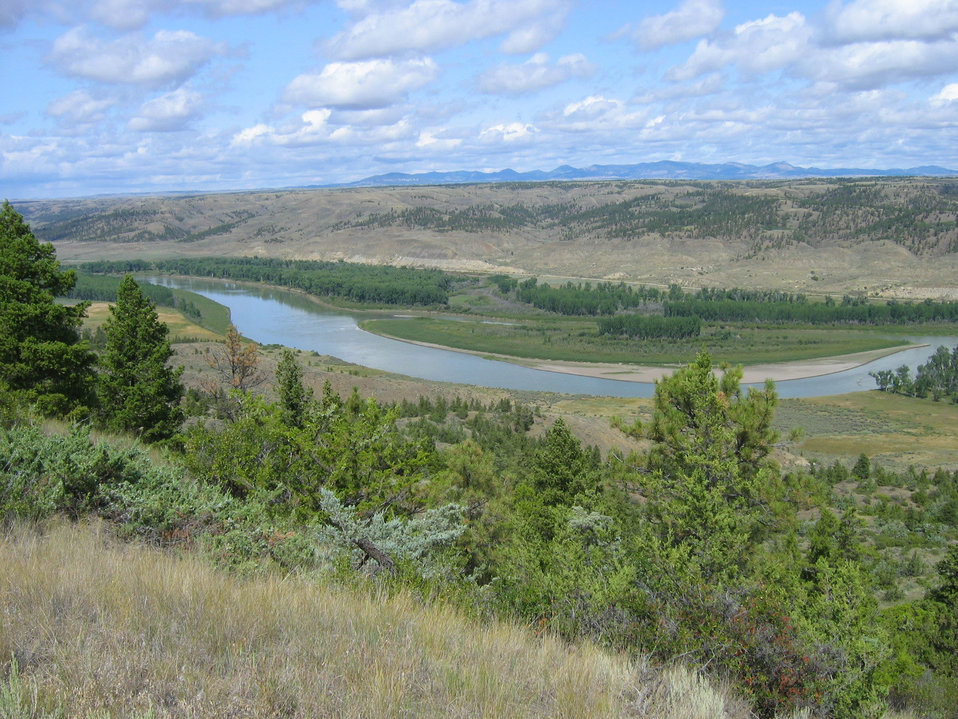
View of the Missouri River

Another view of the Missouri River Breaks on Charles M. Russell National Wildlife Refuge in Montana.